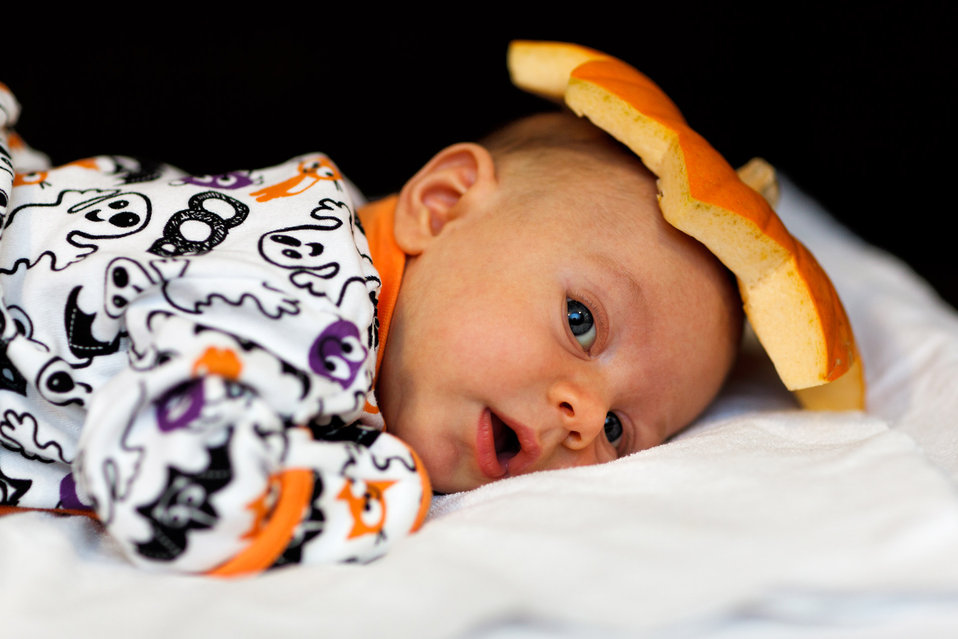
Pumpkin baby

Halloween pumpkin baby.